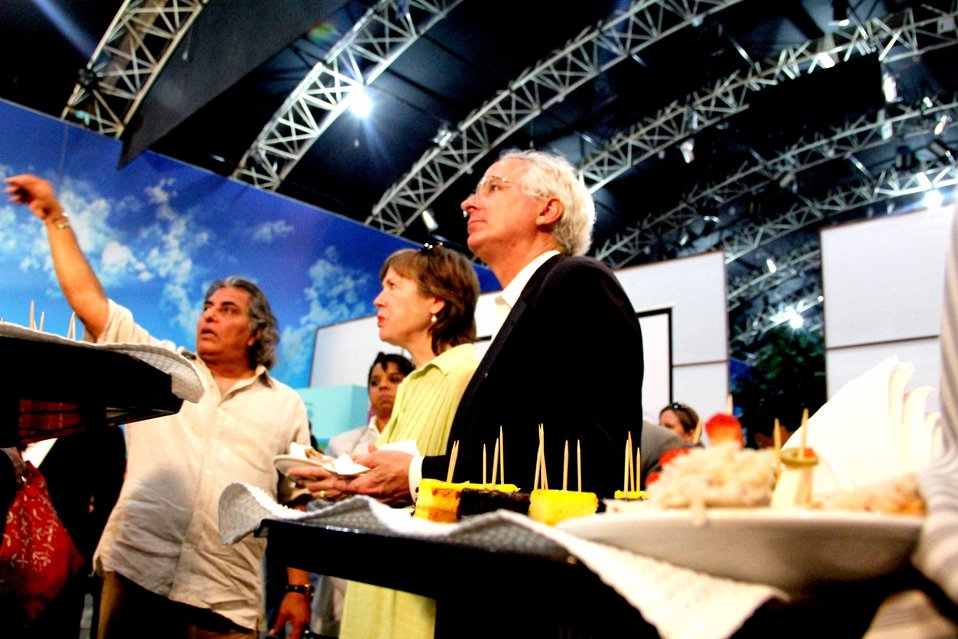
U.S. Ambassador’s Visit to Sim Sim Hamara Highlights U.S. Commitment to Improved Children’s Education in Pakistan at Lahore on 28 April, 2012

Usman Pirzada, Dr. Marliy wyatt and Cameron Munter on the set on Sim sim hamara